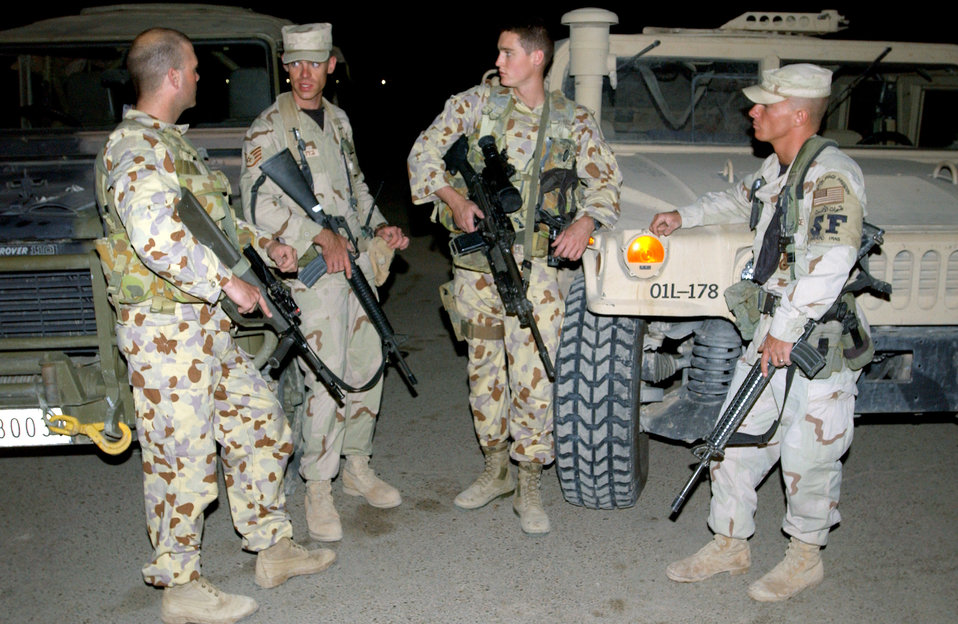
Defending the base

BAGHDAD INTERNATIONAL AIRPORT, Iraq -- (From left) Sgt. Nathan Hogg, Staff Sgt. Shawn Schwantes, Aircraftman Lucas Kilpatrick and Senior Airman Sheridan Conklin meet up during their air base defense patrol. Hogg and Kilpatrick are members of the Royal Australian Air Force, and Schwantes and Conklin are assigned to the 447th Expeditionary Security Forces Squadron. Schwantes is deployed from the 319th Security Forces Squadron at Grand Forks Air Force Base, N.D., and Conklin is deployed from the 9th SFS at Beale AFB, Calif.